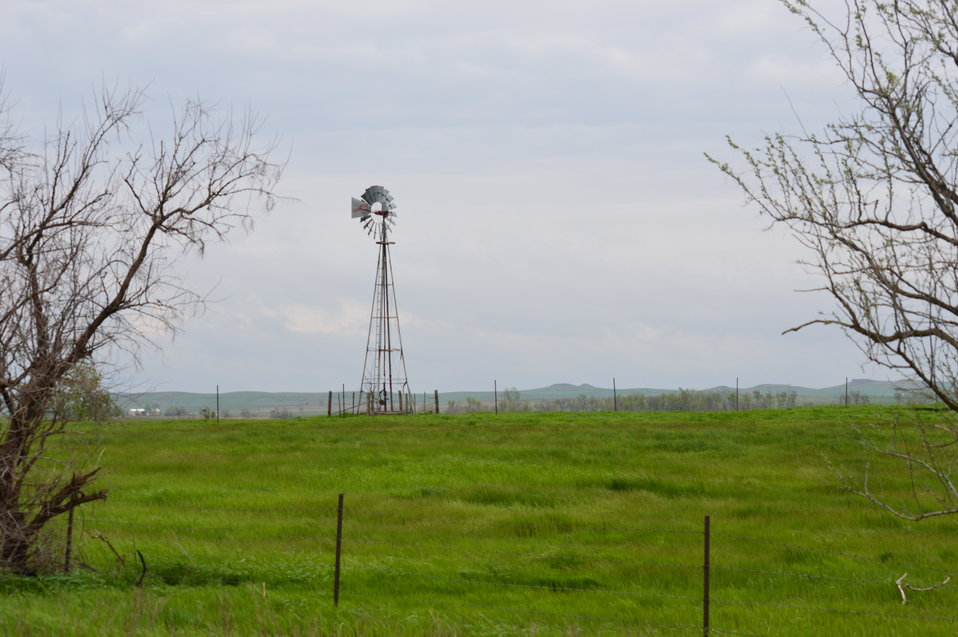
Windmill

Scenery and wildlife at Lake Ilo National Wildlife Refuge in North Dakota